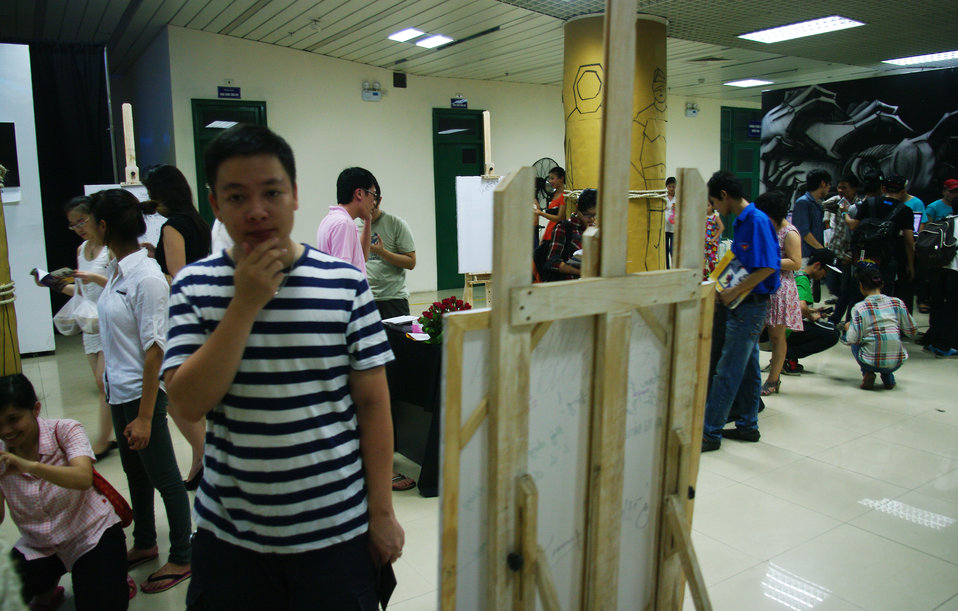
MTV EXIT opens Youth Forum in Hanoi